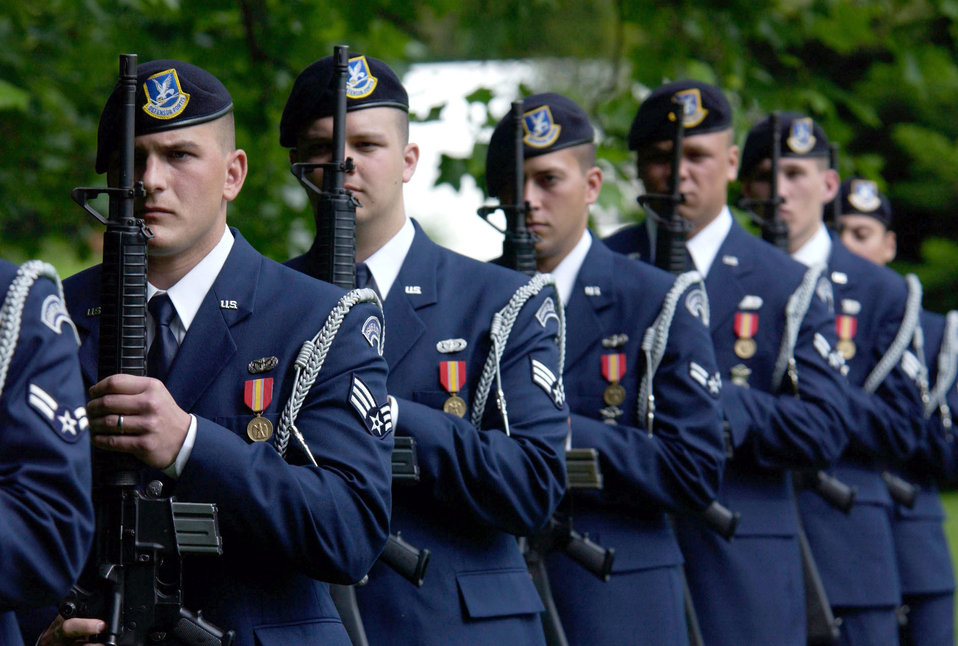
The long blue line

PARIS -- The U.S. Air Forces in Europe Elite Guard from Ramstein Air Base, Germany, prepare to honor 63 Americans who gave their life during World War I. The 21-gun salute was part of Memorial Day ceremonies at the Escadrille La Fayette Memorial here. Several ceremonies throughout France observed the American holiday.